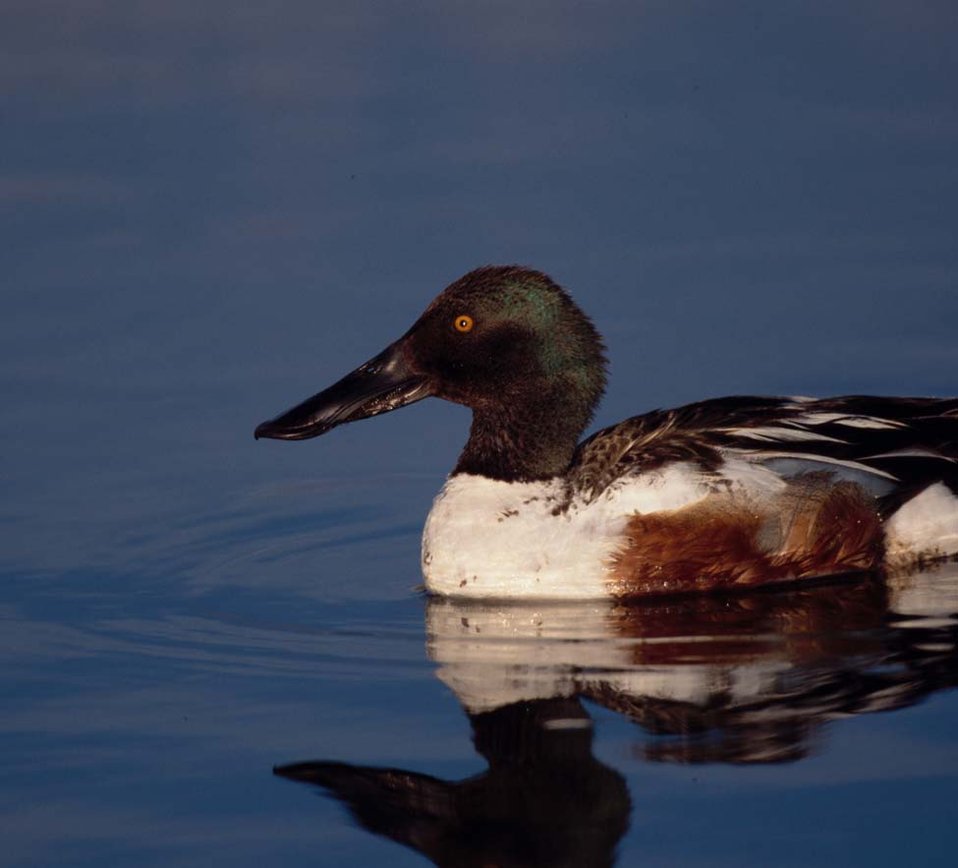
Northern Shoveler Drake

The lands of the refuge were established to protect and provide habitat for migratory birds that cross State lines and international borders and are by law a Federal trust responsibility.
The refuge is of great value to waterfowl and shorebirds, as well as other migrating water-dependent bird species, because of the diversity of wetland and upland habitats that provide for the diverse life cycle needs of these species.